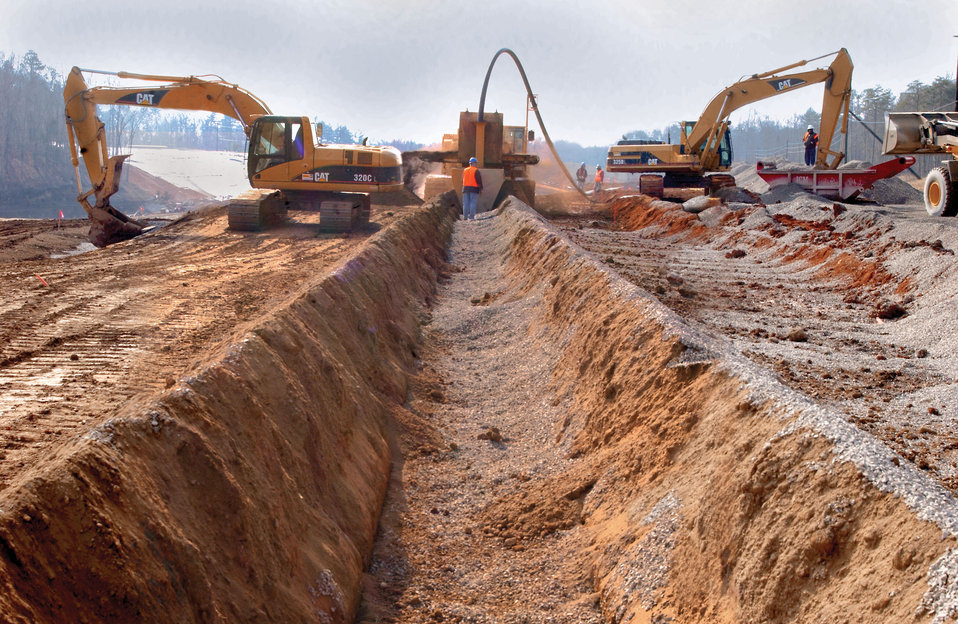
Solid Waste Storage Area (SWSA)

04-019-37 DOE photo by Lynn Freeny

Solid Waste Storage Area (SWSA) Trench Digger Oak Ridge Tennessee 2-4-2004